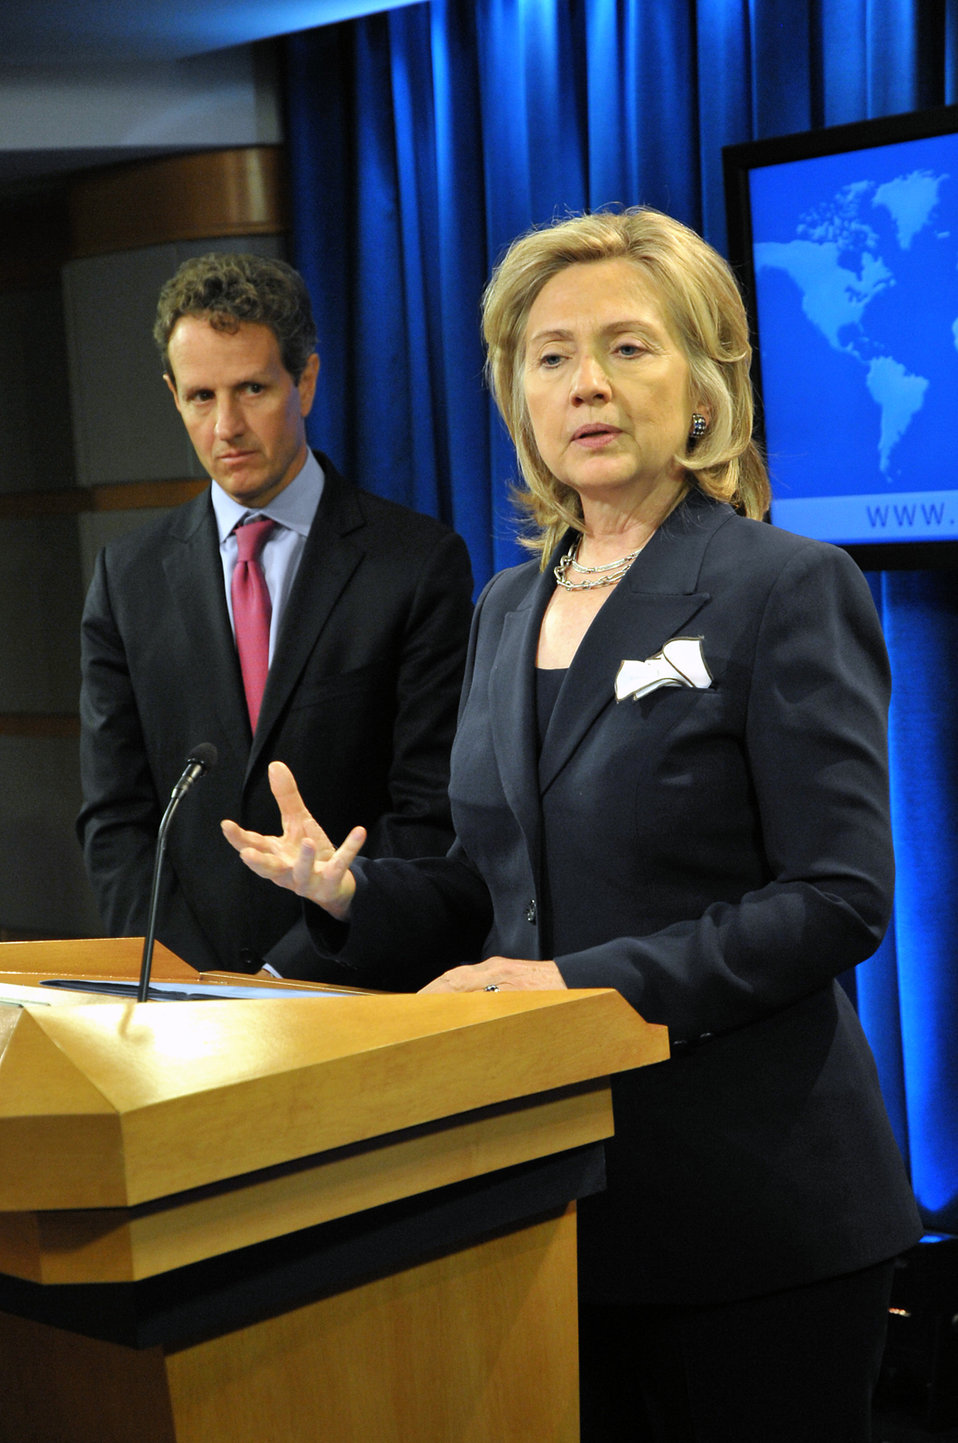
Secretary Clinton and Secretary Geithner Deliver an Announcement of an Executive Order on Human Rights Designations

U.S. Secretary of State Hillary Rodham Clinton and U.S. Secretary of the Treasury Timothy Geithner deliver a press announcement announcing an executive order on Human Rights Designations in the Press Briefing Room at the U.S. Department of State in Washington, D.C., on September 29, 2010.